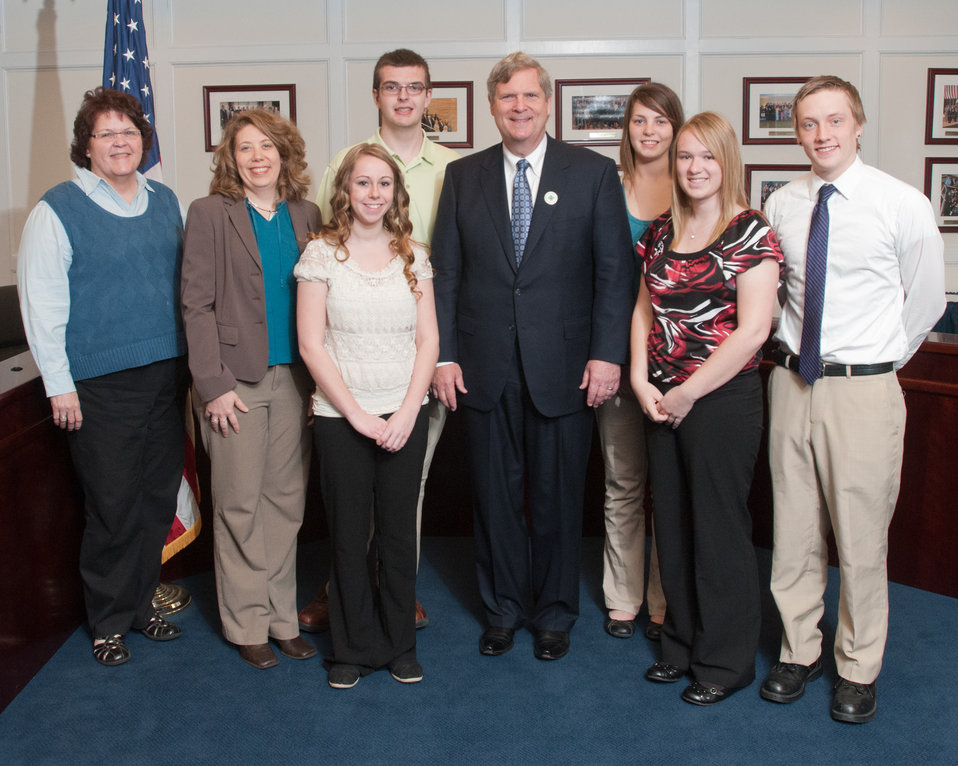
U.S. Department of Agriculture (USDA) Secretary Tom Vilsack (center) meets with the Iowa 4-H delegation of (left-right) Marisue Hartung, Brenda Allen, Jayde Hapgood, David Runneals, Kysa Downing, Lauren Baker and Evan Fritz, during the 2013 National 4-H Conference, on Monday, April 8, 2013 in Chevy Chase, MD. The youth delegates are in grades 10-12 (15-19 years old). The purpose of the conference is to 1) engage 4-H youth in personal development experiences that will increase knowledge, resources, and skills; 2) discuss topics affecting youth and 4-H programming nationwide; and 3) empower and mobilize 4-H youth to create positive social change in their communities in a meaningful and genuine way. The conference also reinforces the rich history of 4-H and its valuable tie to USDA, Cooperative Extension and the Land-Grant University System.